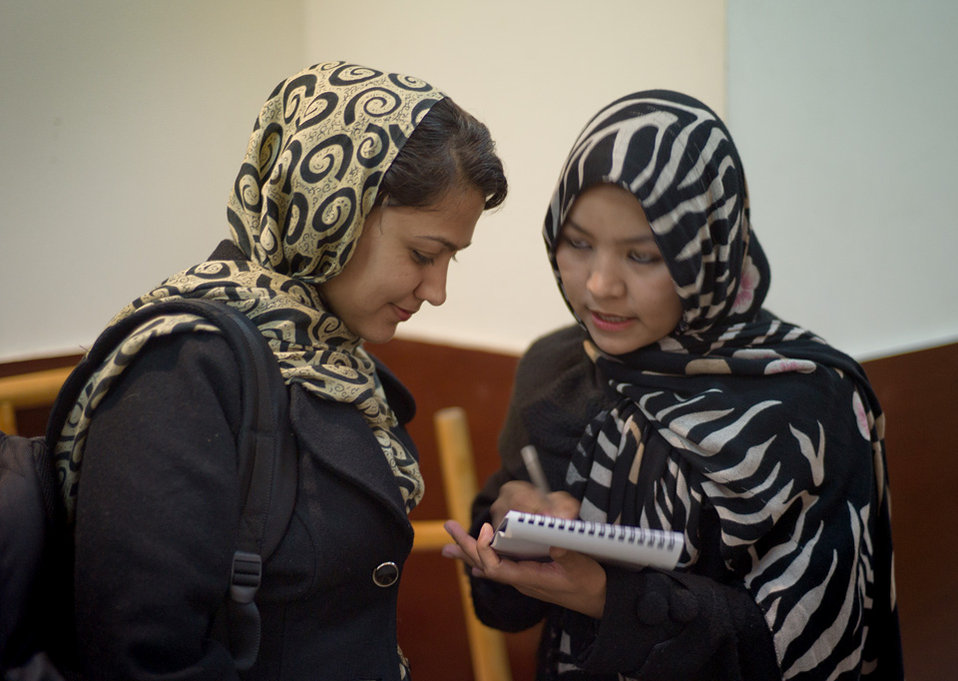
Image 8 3:18:12